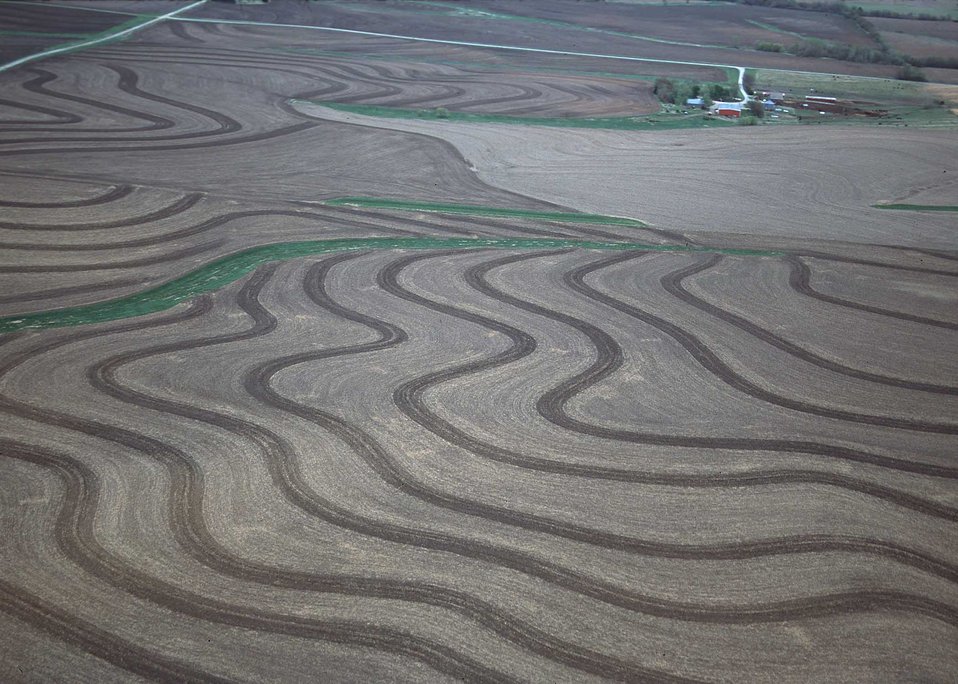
Aerial view on contour terraces and grassed waterways for erosion control. Kansas.